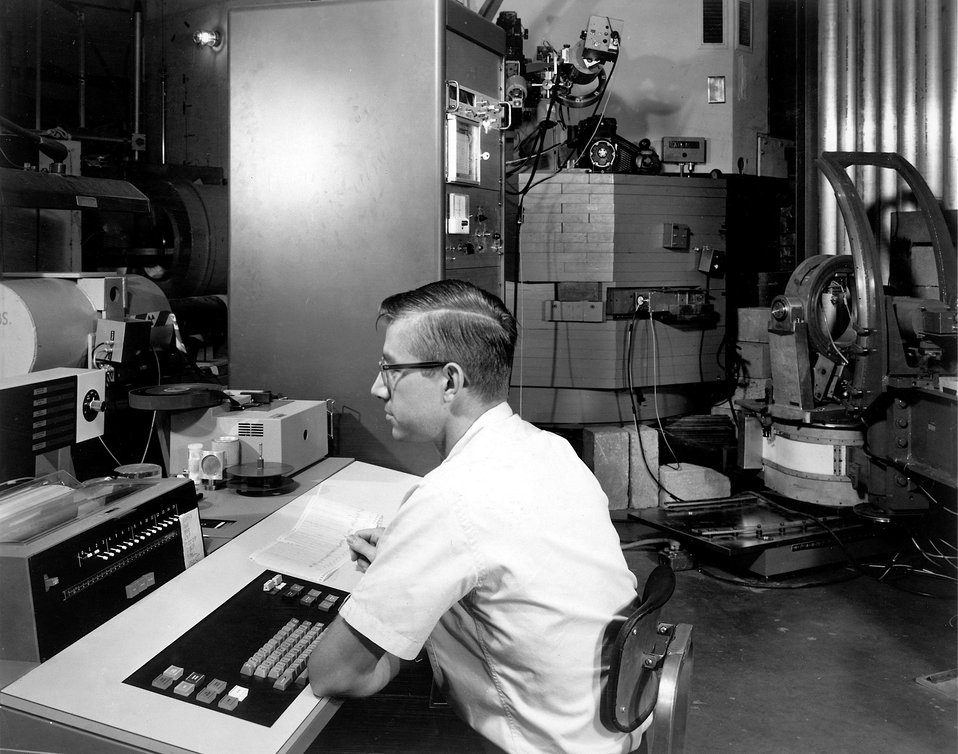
The ARCADE system developed at Argonne is being applied to five different areas of research for use in control of experiments and data. In this ARCADE is being used in diffraction experiments to determine crystal lattice structures.
c.1970